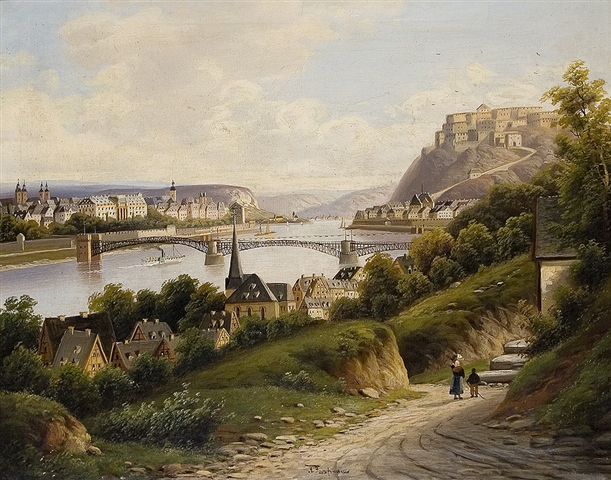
Deutsch: Blick auf Koblenz. Öl auf Leinwand, 58 x 73 cm.